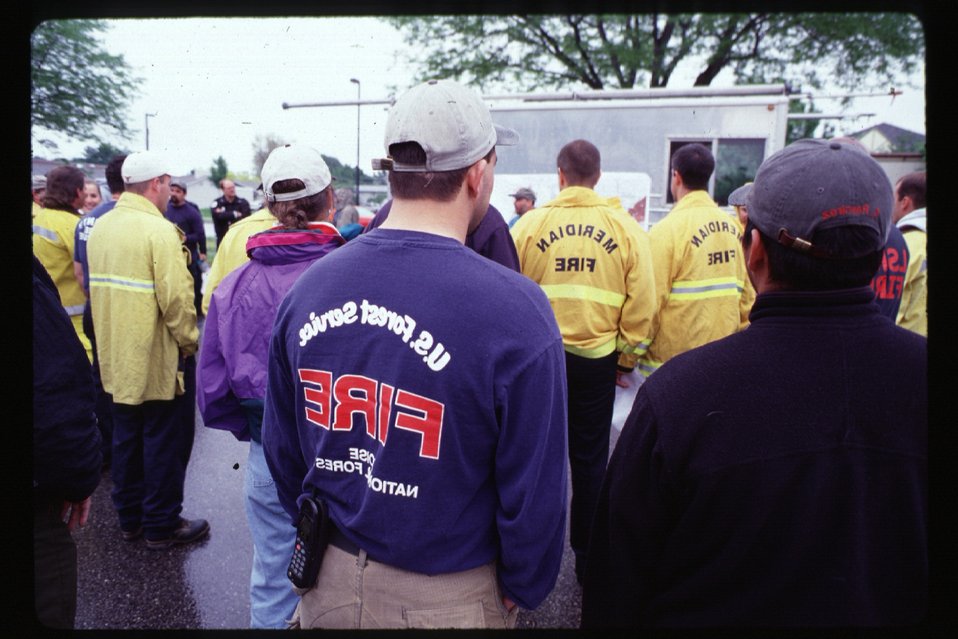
Fire fighters Four Rivers Field Office LSRD Lower Snake River District